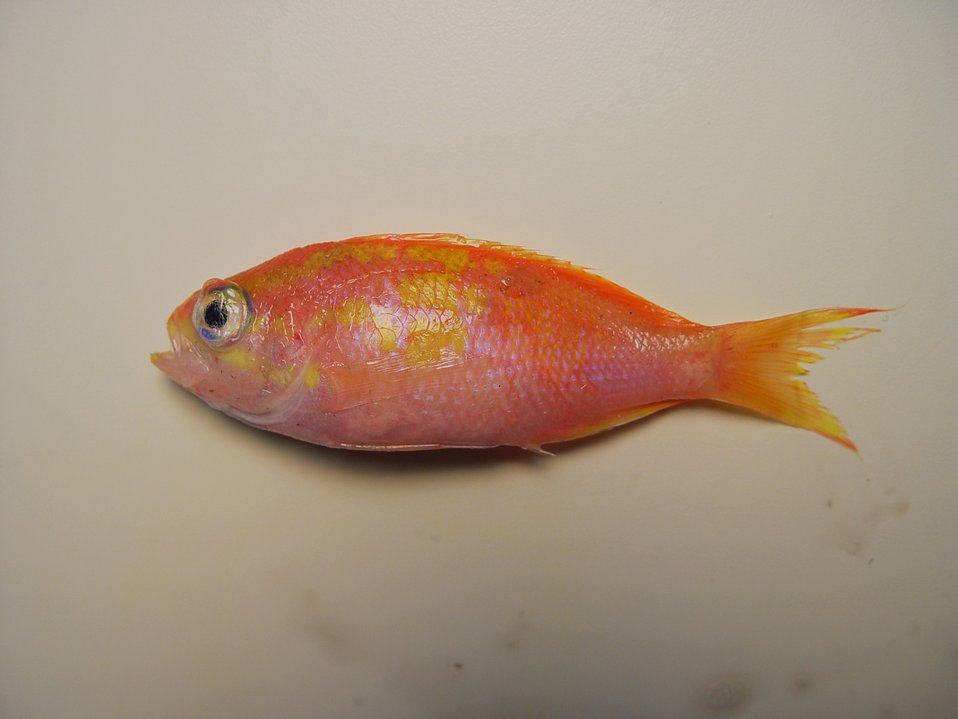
Juvenile roughtongue bass ( Pronotogrammus martinicensis )